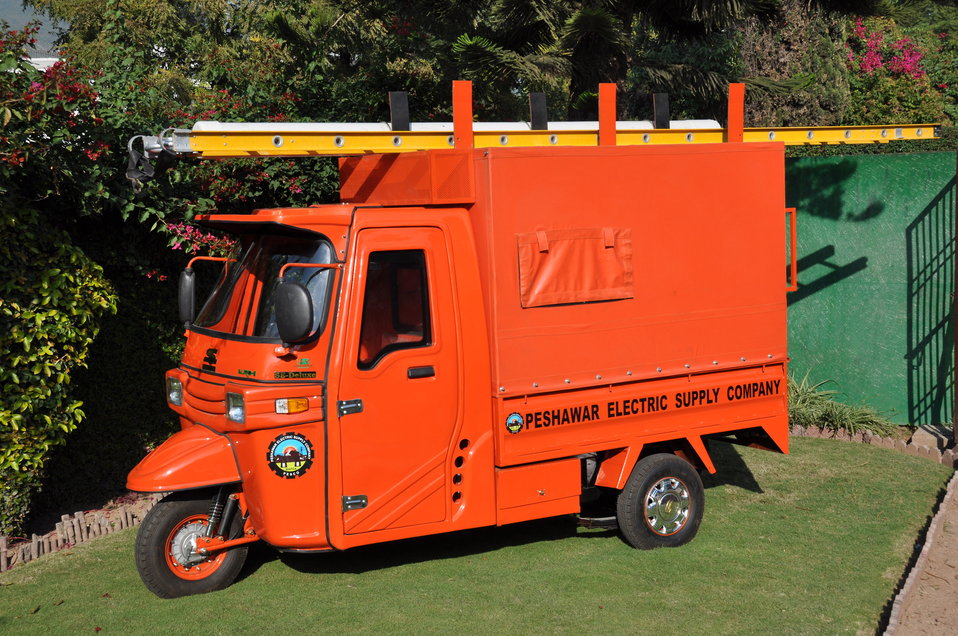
United States Government Strengthens PESCO Field Operations 18